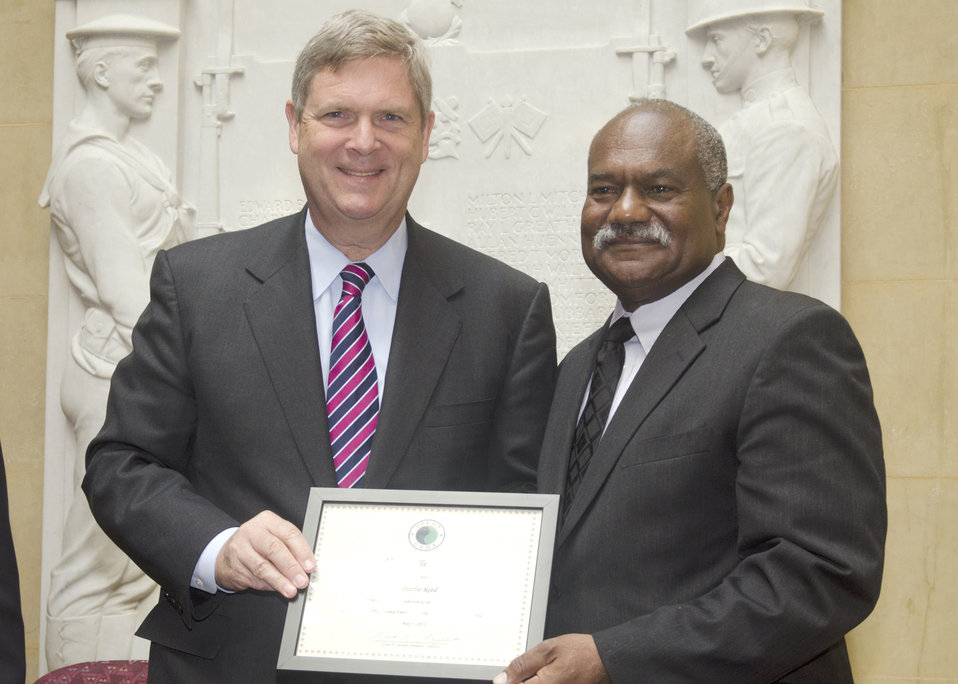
The U. S. Department of Agriculture (USDA) Unsung Heroes awards are presented to employees who have consistently provided exceptional service to the American public. Through their accomplishments, these “Unsung Heroes” demonstrate their dedication to public service and their commitment to fulfilling the mission of USDA. Assistant Secretary for Departmental Management Pearlie Reed receives his award on Tuesday, May 3, 2011 on the Whitten Building patio at the Department of Agriculture in Washington, D.C.